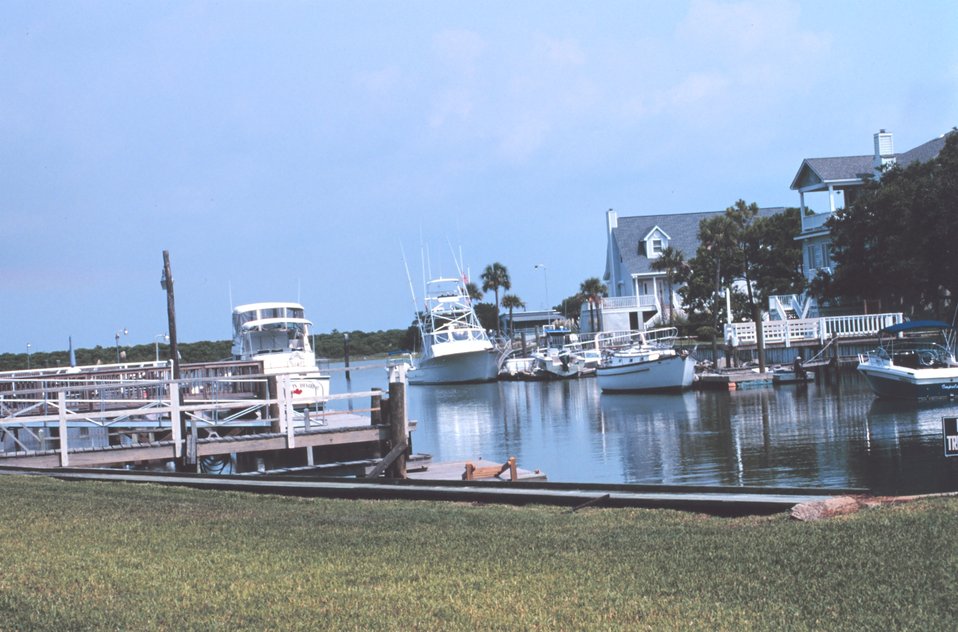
Recreational fishing boats and vacation homes